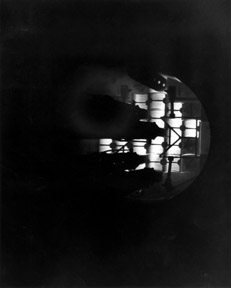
View of the core of the Medical Research Reactor, looking down into the 22-foot high
cylindrical tank containing the enriched uranium fuel elements.